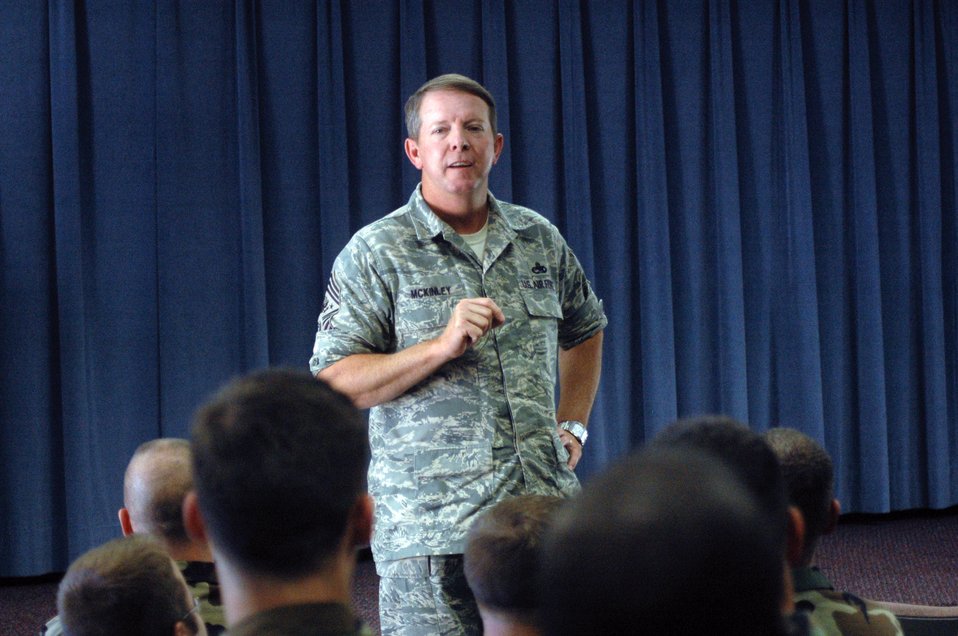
Chief McKinley visits Robins, discusses Air Force priorities

Chief Master Sgt. of the Air Force Rodney J. McKinley addresses Airmen at the Robins NCO Academy as part of the chief's Oct. 11 visit to Robins Air Force Base, Ga.